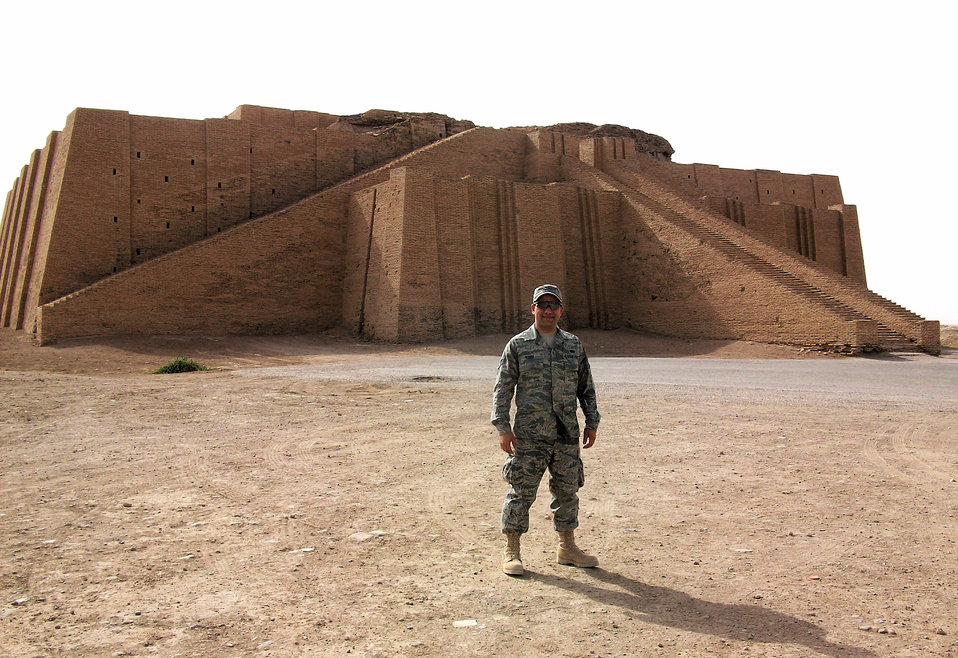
Immigrant Airman comes full circle

Senior Airman Bassel Noori stands in front of an ancient structure Oct. 12 historically known to be part of Babylon, an ancient city-state of ancient Mesopotamia, of which is found in present-day Al Hillah, Babil Province, Iraq. Airman Noori is deployed to Ali Base, Iraq, which is near the ruins of Babylon. Airman Noori is native to the Middle East and has an Afghani father and a Lebanese mother.